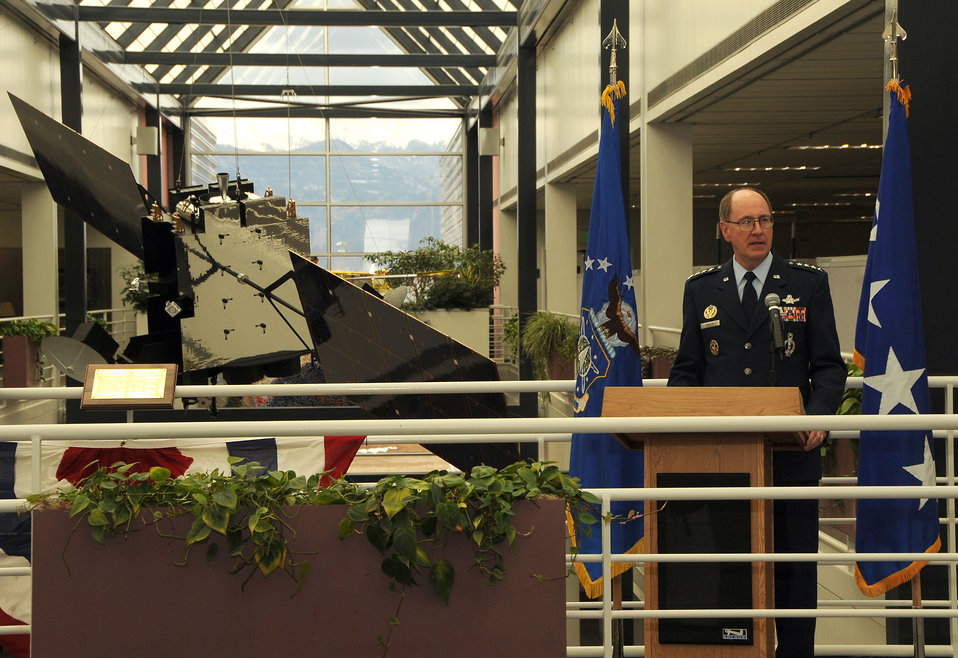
New Advanced Extremely High Frequency satellite

Gen. C. Robert Kehler, commander of Air Force Space Command, addresses attendees at a special ceremony at Peterson Air Force Base, Colo., where he accepted a one-quarter scale model of the new Advanced Extremely High Frequency satellite from Lockheed Martin representatives. The first AEHF satellite is scheduled to be launched the last quarter of 2010.